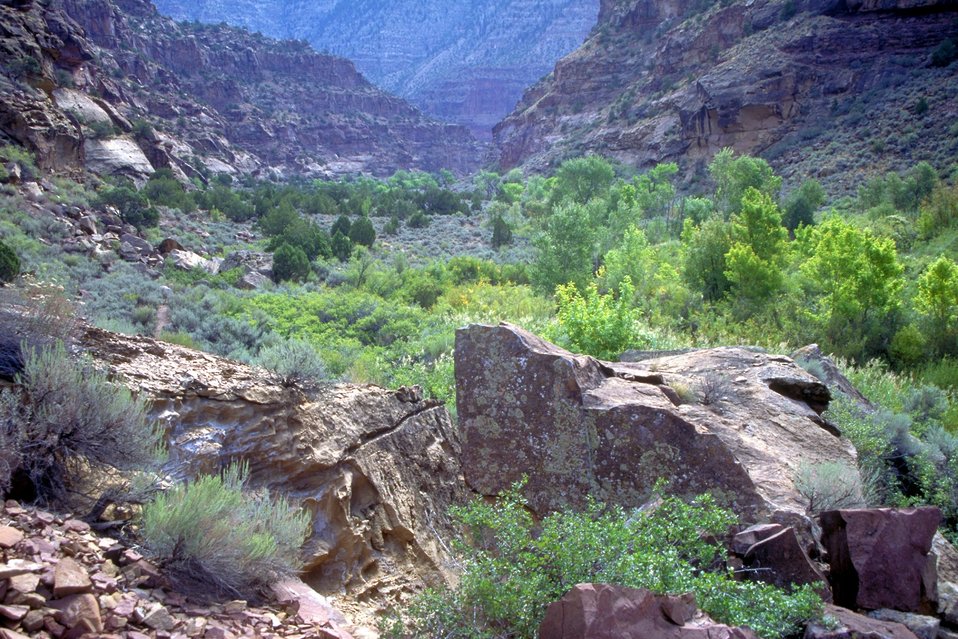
Desolation/Gray Canyons near Price, Utah.